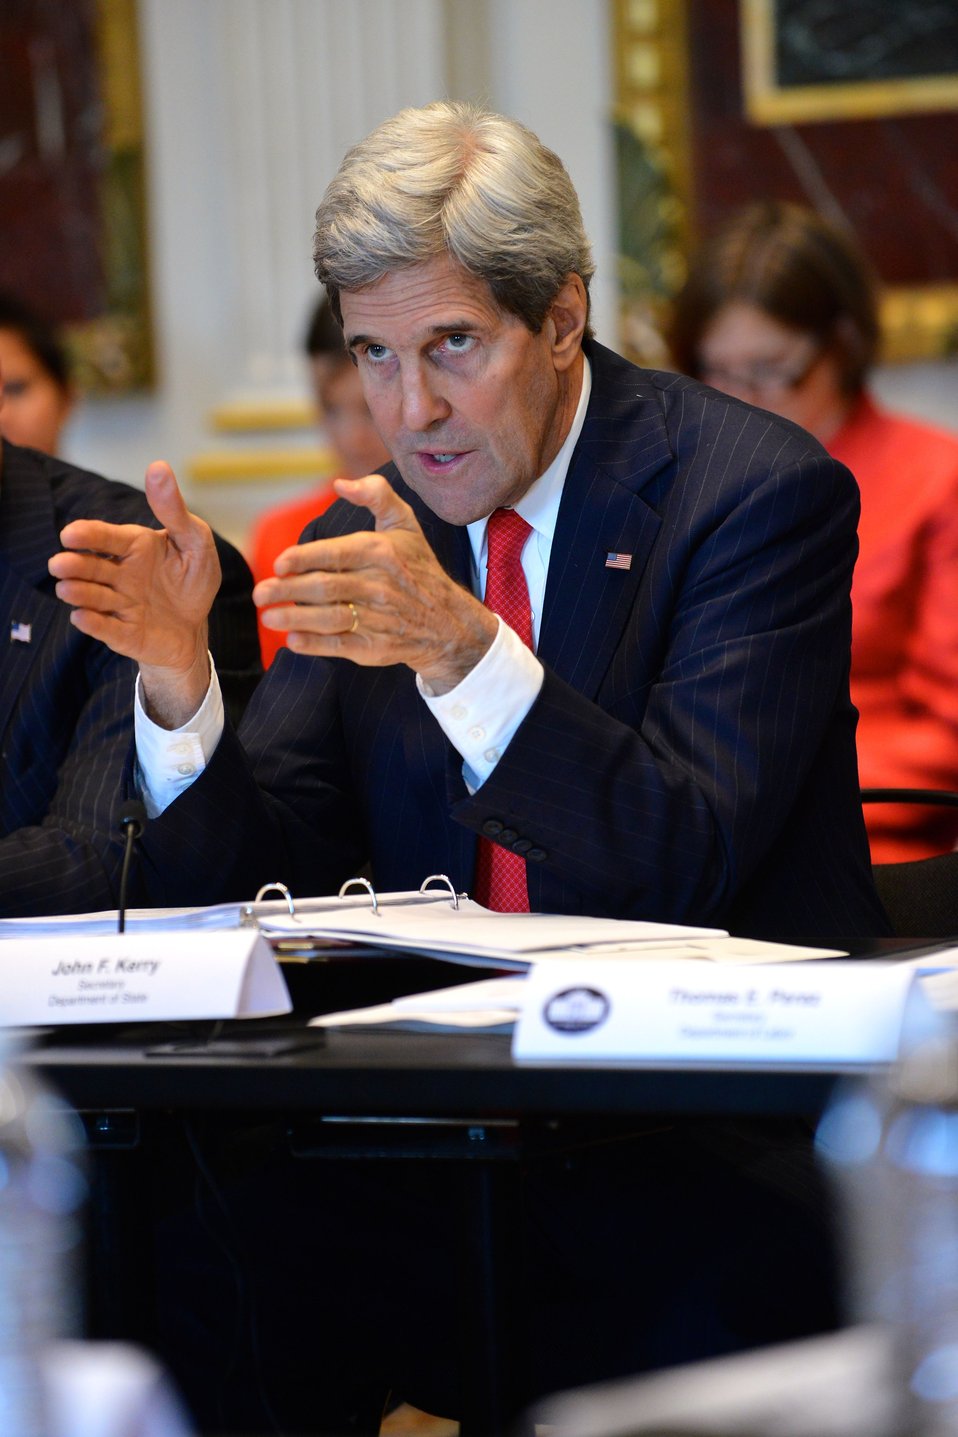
Secretary Kerry Chairs the President’s Interagency Task Force to Monitor and Combat Trafficking in Persons

U.S. Secretary of State John Kerry chairs the annual meeting of the President’s Interagency Task Force to Monitor and Combat Trafficking in Persons at the White House in Washington, D.C., on April 8, 2014.